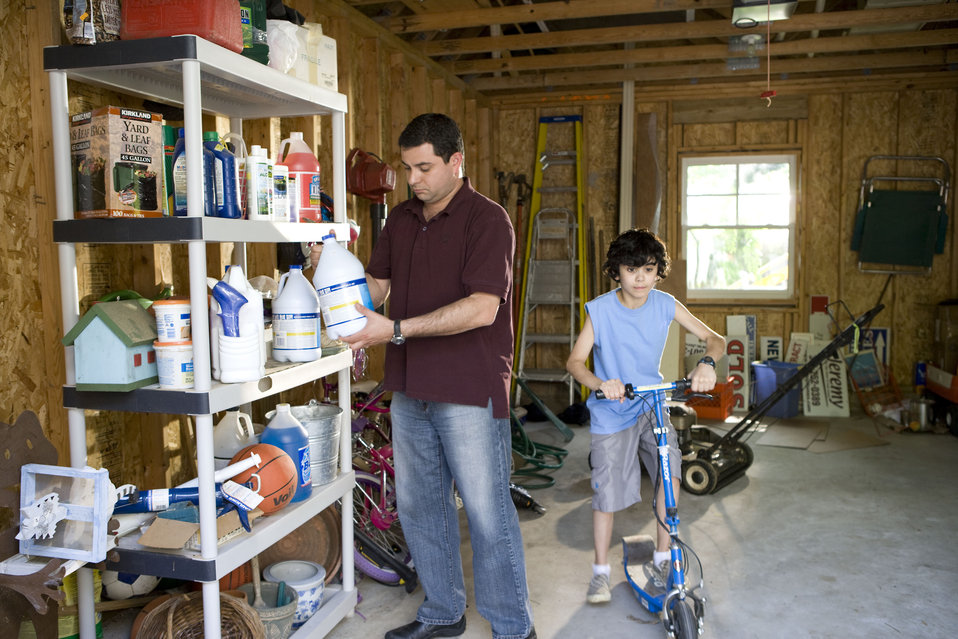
Here we see a father organizing his garage contents, while his son was about to embark on a scooter ride.